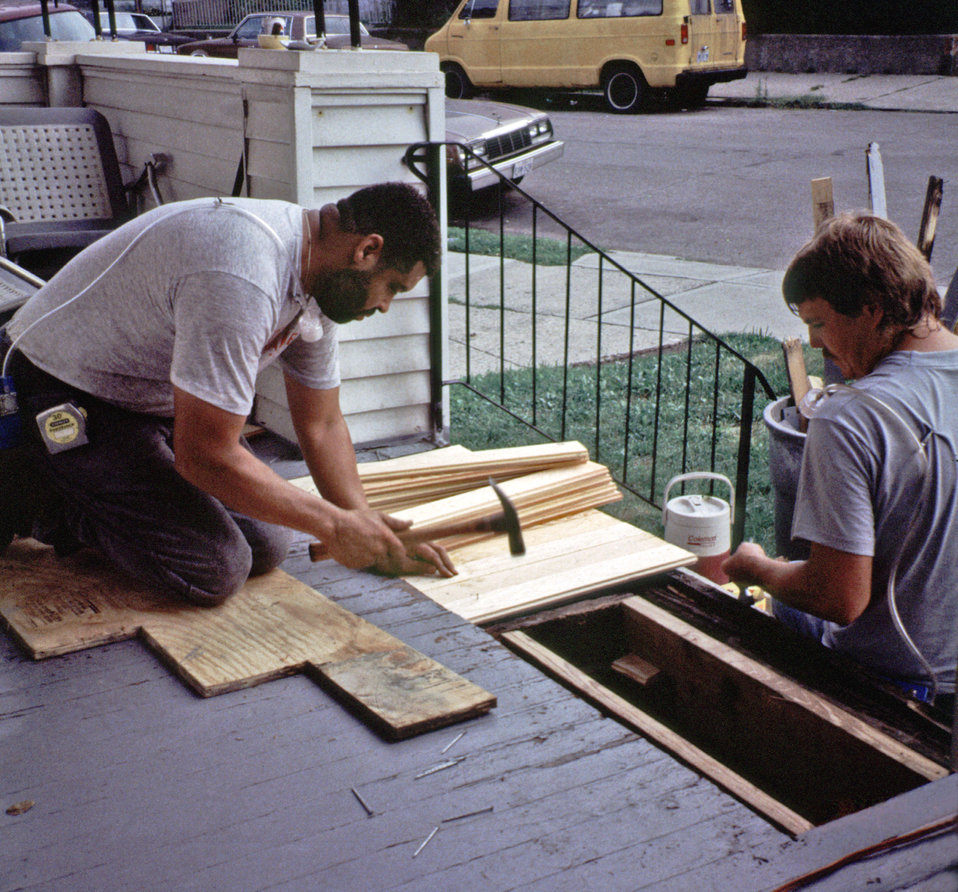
This 1993 photograph shows two workers repairing a wooden porch that had been dismantled by hand, demonstrating exterior renovation methods typically used on residences where lead-based paint was present. This was a low-exposure method.